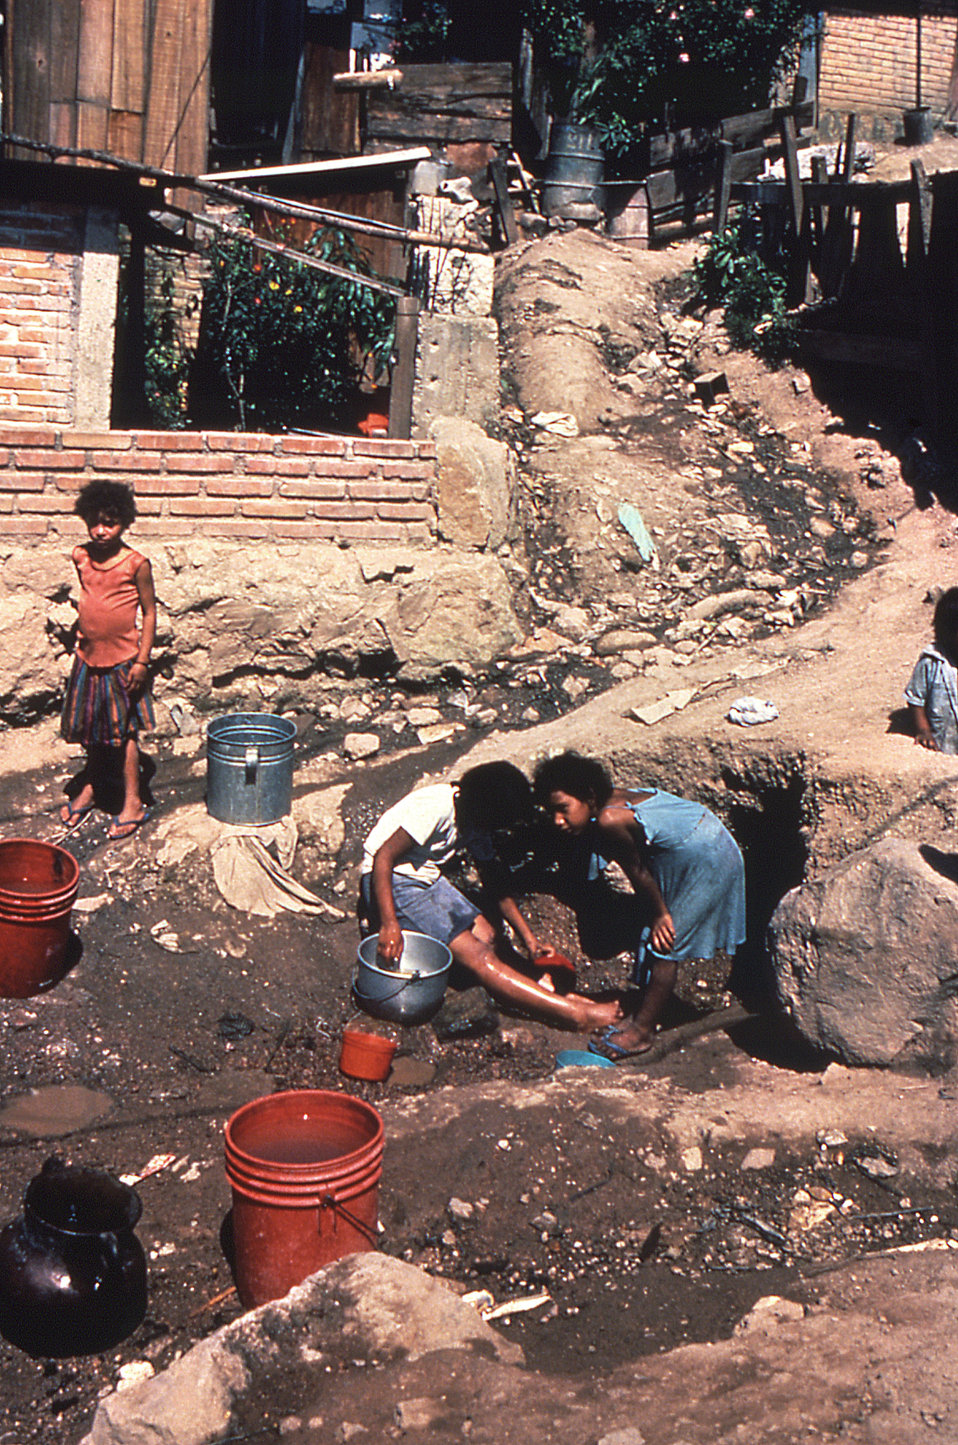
In this particular picture, a number of Latin-American children are seen playing in a water run-off zone on the outskirts of a rural town, which is a prime area for an unimmunized child to acquire the poliovirus.